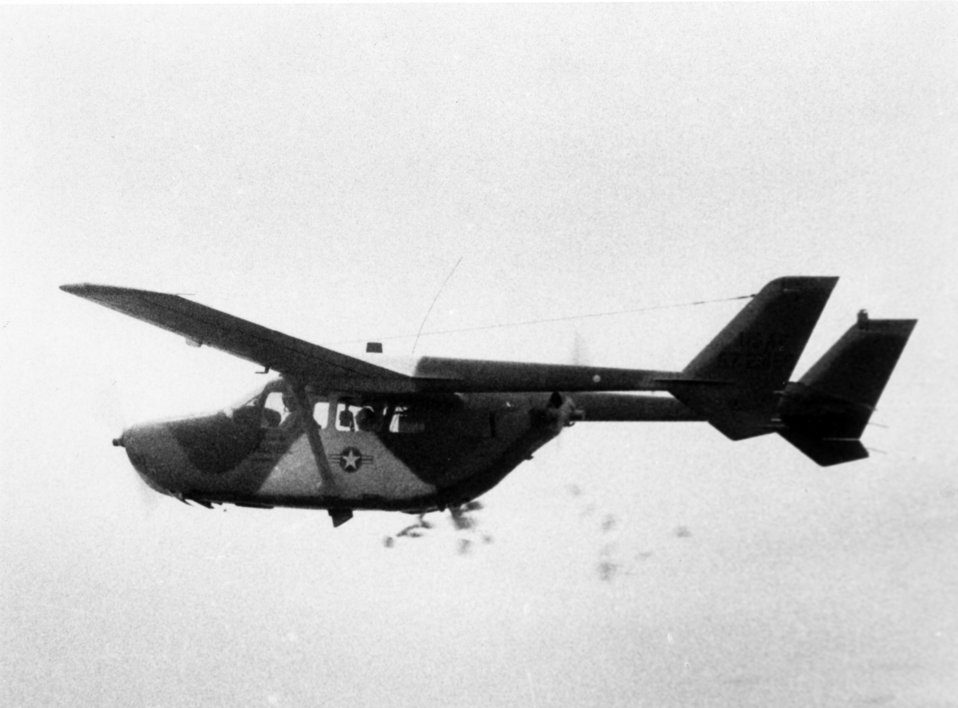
O-2

1970's -- Side view of a U.S. Air Force O-2 of the 9th Special Operations Squadron dropping Chieu Hoi leaflets over the Republic of Vietnam. July 1970 Photo by Sgt. Wiliam F. Diebold, USAF